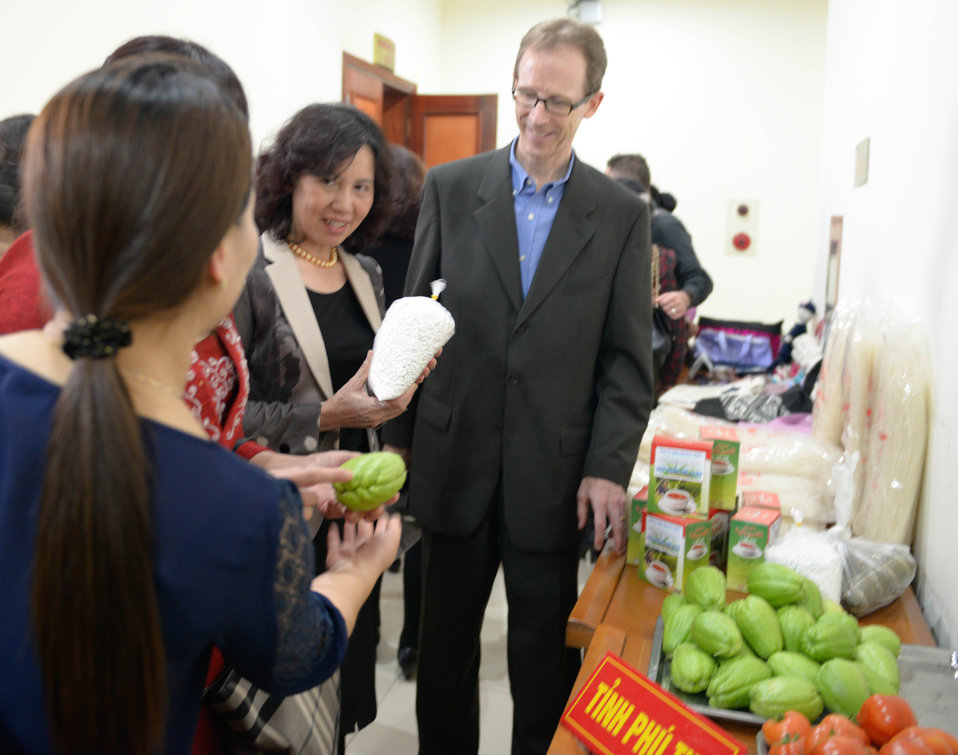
Women entrepreneurs showcases some of the products they produce

Phu Tho, Vietnam. March 1, 2014.